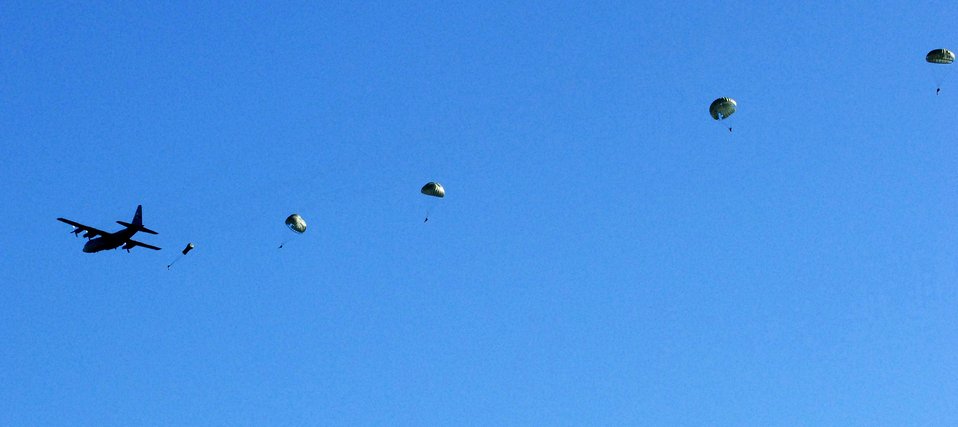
Dyess Airmen help airborne operations return to Fort Hood

A Dyess C-130 Hercules from Dyess Air Force Base, Texas, drops personnel during the first airborne operation in more than 10 years Feb. 27 over the Recondo Drop Zone at Fort Hood, Texas.